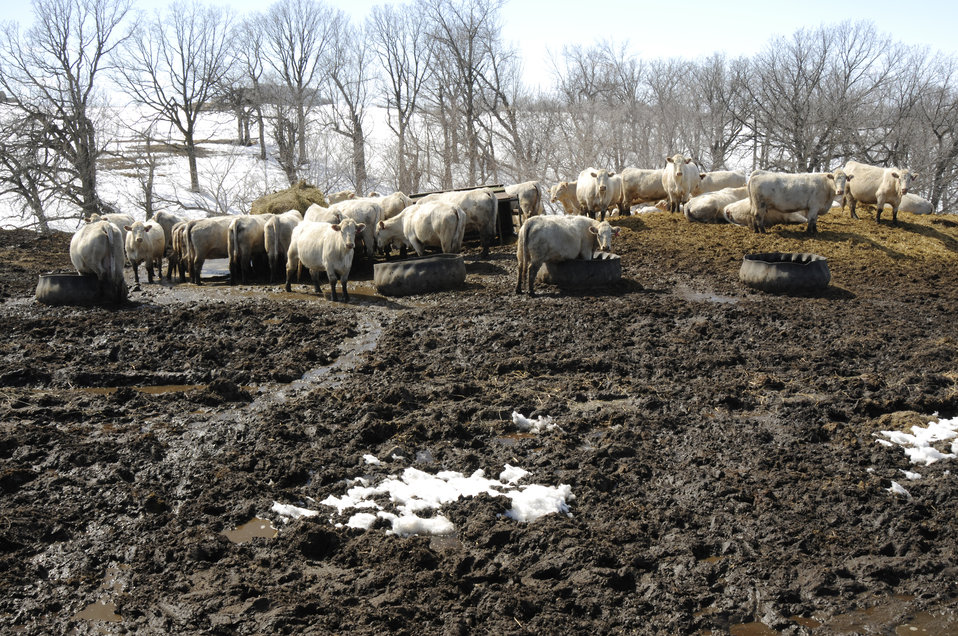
Cattle were stranded on isolated pieces of high ground in North Dakota on April 8, 2009 due to the Red and Missouri Rivers overflowing their banks. North Dakota received abnormally heavy winter snows atop saturated and frozen ground, which was already saturated when it froze at the beginning of winter, melting snow which could not be absorbed by the frozen ground, additional precipitation from a rain storm on March 22, 2009 and a late snowstorm at the end of the month added to the existing snowpack.